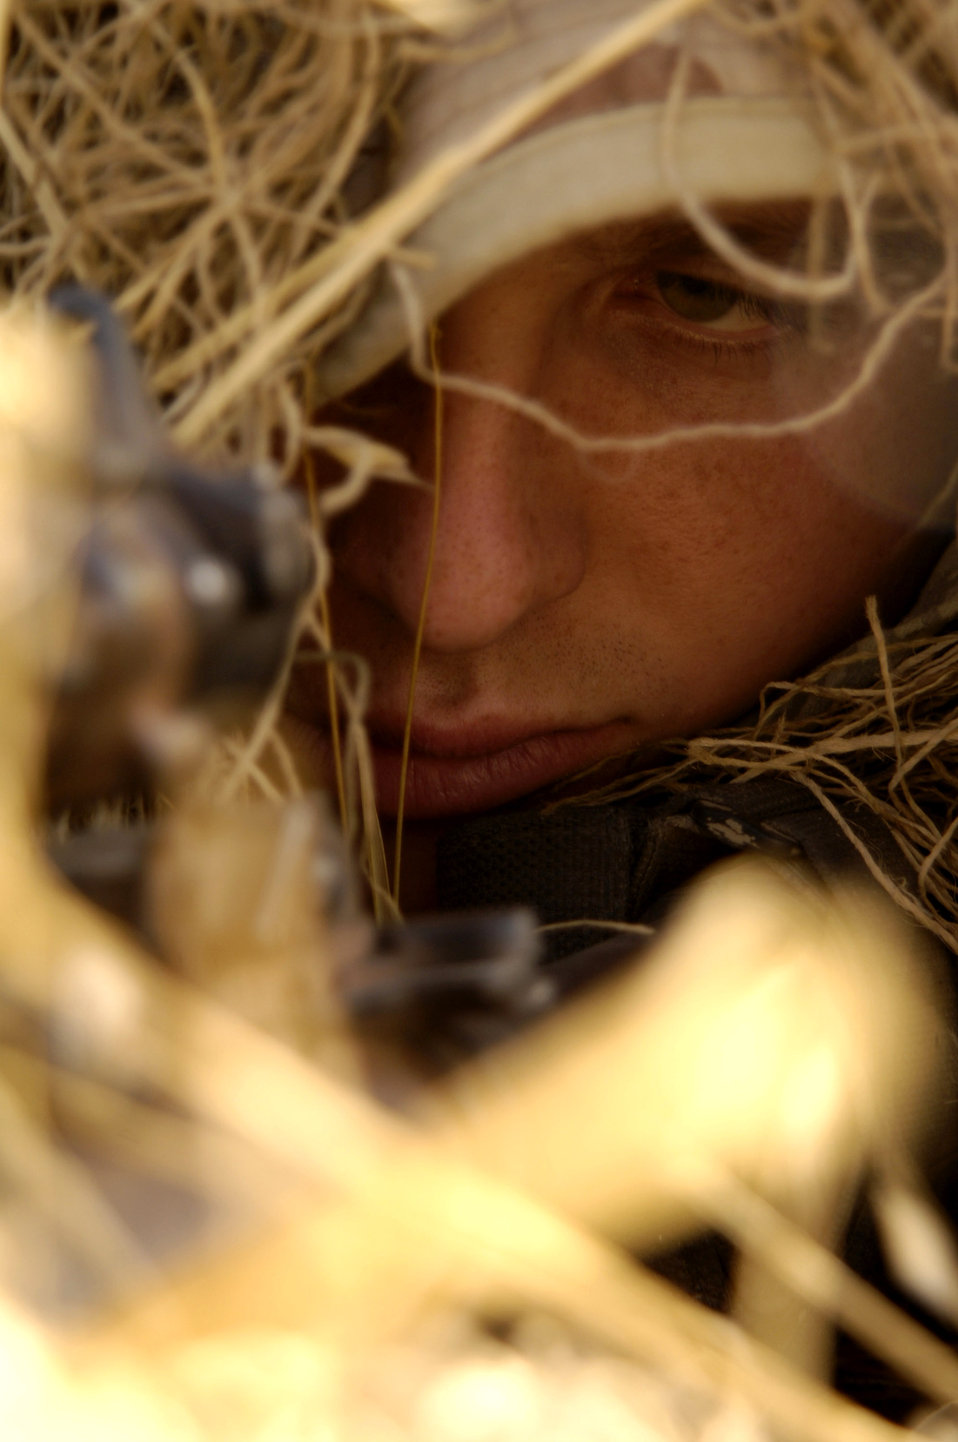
Sniper training

Airman 1st Class Matt Leeper demonstrates how camouflaged gilly suits blend into their surroundings while setting up surveillance for terrorist activity Nov. 14 in Iraq. The 506th Expeditionary Security Forces Squadron at Kirkuk Air Base, Iraq, houses a close precision engagement team of Air Force snipers who train as anti-sniper teams to target terrorist and insurgent snipers attacking U.S. and coalition forces in the area. Airman Leeper is from the 354th Security Forces Squadron at Eielson Air Force Base, Alaska, deployed to Kirkuk Air Base, Iraq, as a member of the 506th Expeditionary Security Forces Squadron.